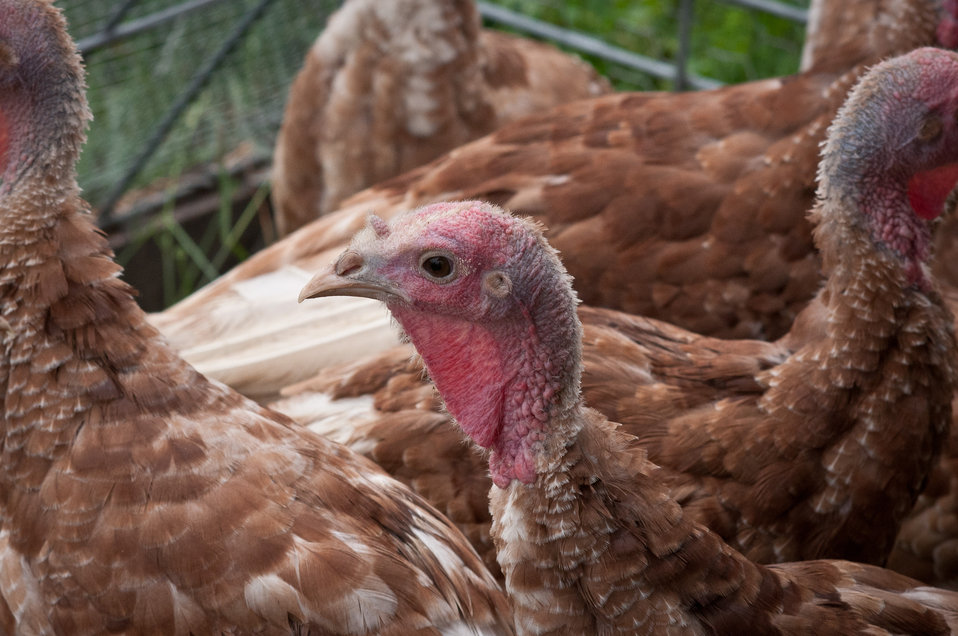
Broiler turkeys graze on organic pastures and live in pens that protect them from predators, direct sun light, and wind at Nick’s Organic Farm, owned by Nick Maravell in Adamstown, MD on Friday, July 12, 2013. The enclosures are light enough to be moved by hand, each day, one consecutive section at a time. This allows the pasture to easily recover from the grazing. The farm produces Black Angus beef, chicken, turkey, eggs, hay, soybeans, corn, alfalfa, orchard grass, rye; and other crops. The cattle are100% grass-fed receiving certified organic pasture, certified organic hay (in winter), water and mineral salts mixed with sea kelp. The cattle are not fed hormones, antibiotics or animal products. Poultry feed from grain is ground from organic grain. The poultry also graze on organic pastures. The farm has conducted on-farm research with federal, state and non-profit agencies to refine organic practices. An organization such as the U.S. Department of Agriculture (USDA) Agricultural Research Service (ARS) center in Beltsville has been able to conduct research to improve organic crops and to breed and manage the cattle so that they have.